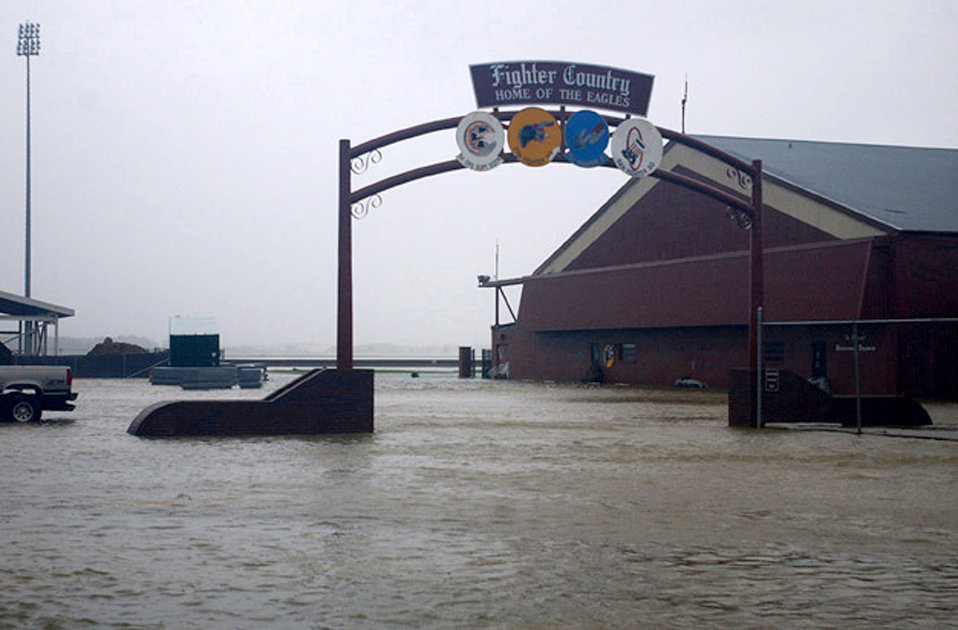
Roughin' the storm

LANGLEY AIR FORCE BASE, Va. -- The main entrance to the flightline here flooded as Hurricane Isabel blew through the base Sept. 18. The aircraft normally parked here had evacuated inland before the storm hit.